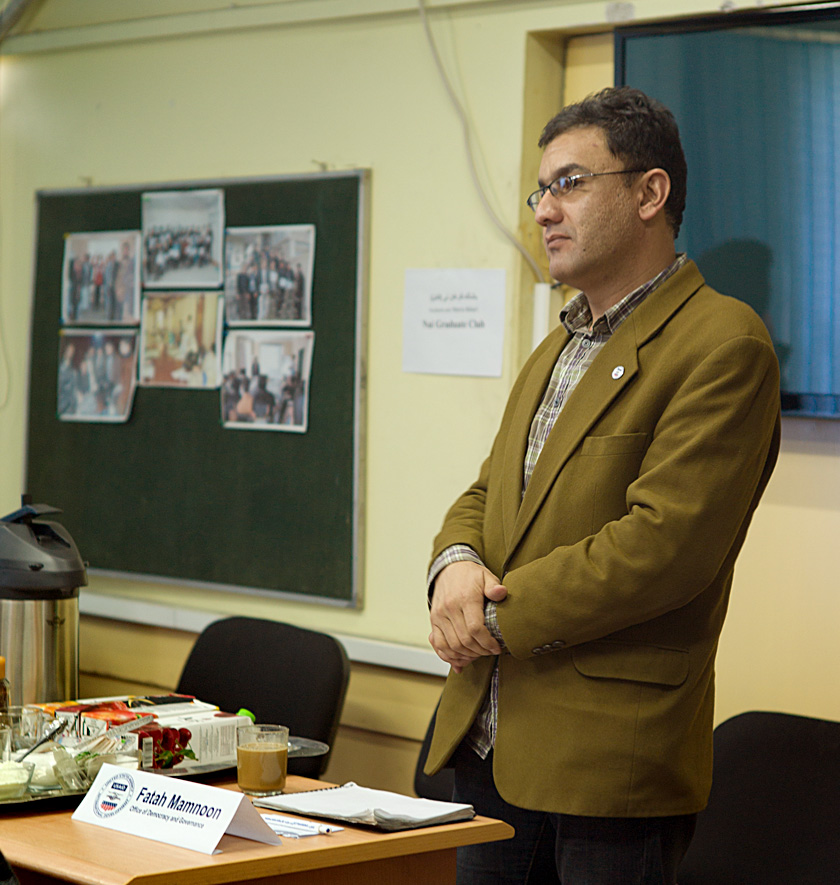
Fatah